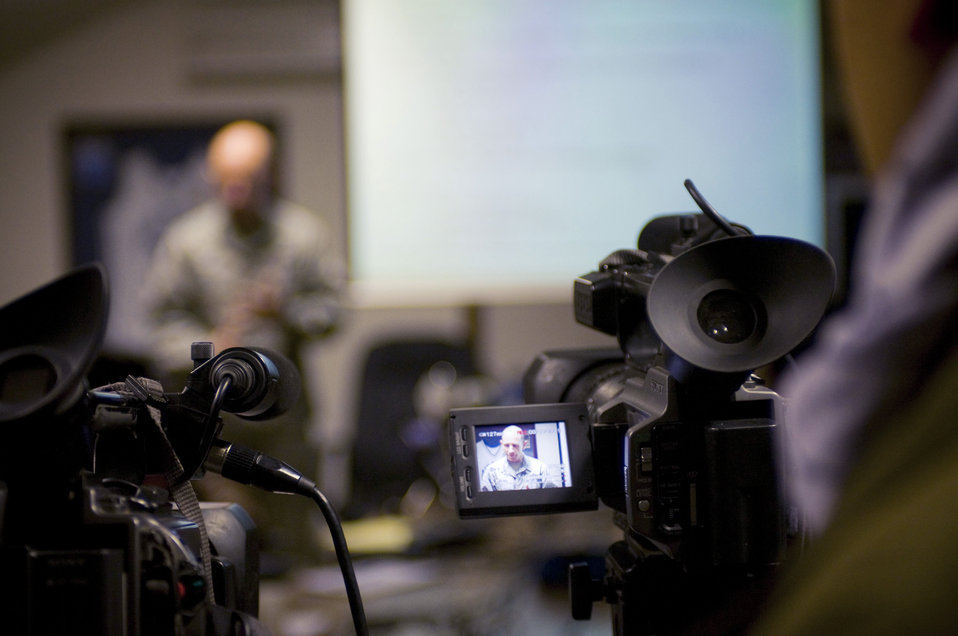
Afghan media learn about close-air support

A cameraman captures a close-air support briefing from Brig. Gen. James M.